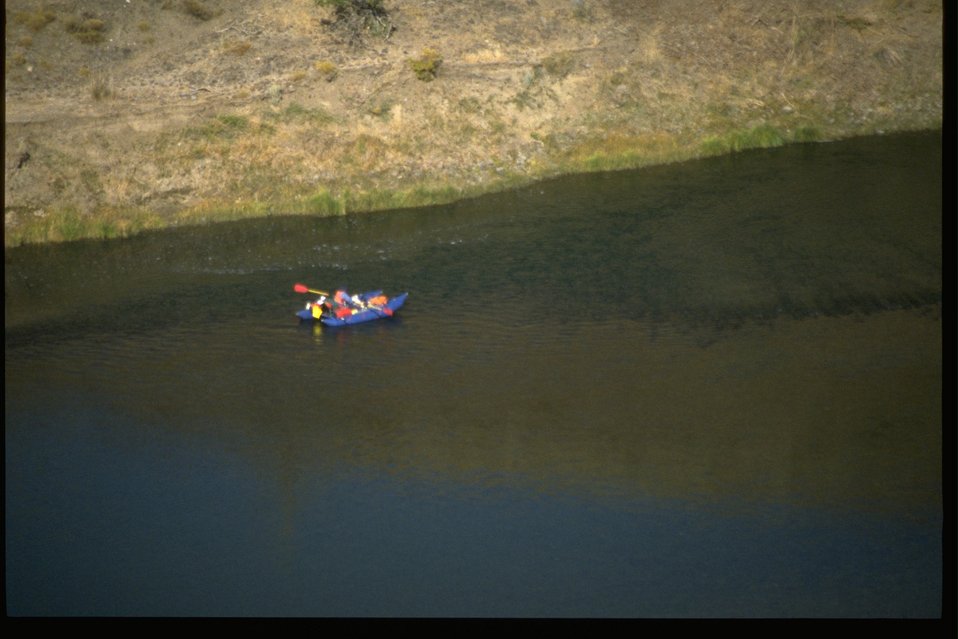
The first of a series of seven photos with a rafter on the John Day River.